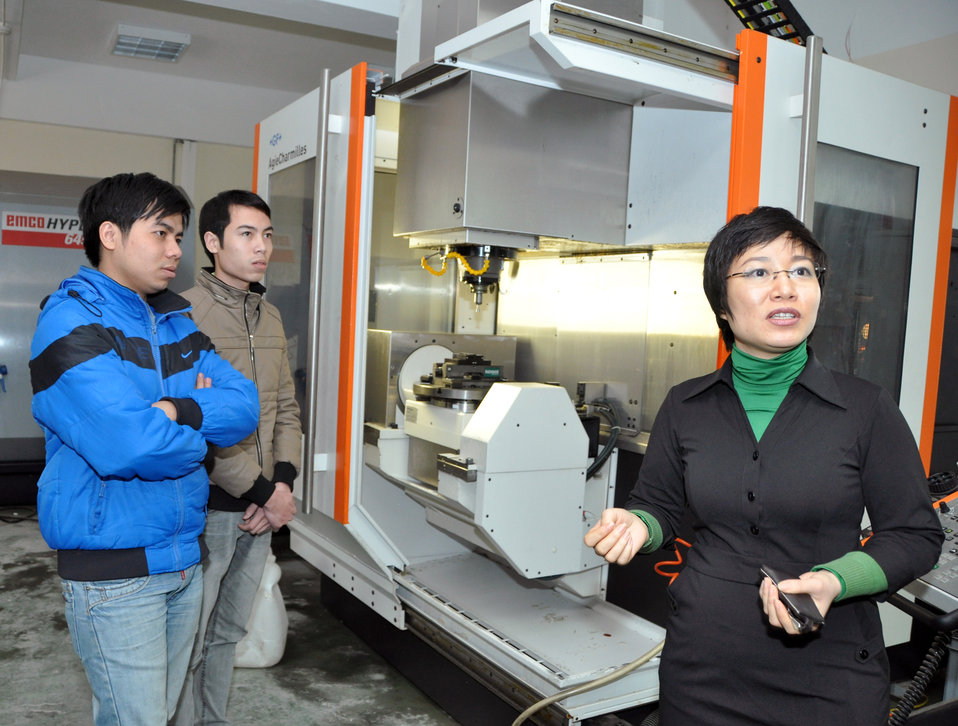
HEEAP faculty participant Dr.Nguyen Thi Hong Minh at the Hanoi University of Science and Technology (HUST)

Visit with Dr. Ir. Nguyen thi Hong Minh, Vice Dean, International and Students Affairs, School of Mechnical Engineering -- Material Cutting and Industrial Instrument Department